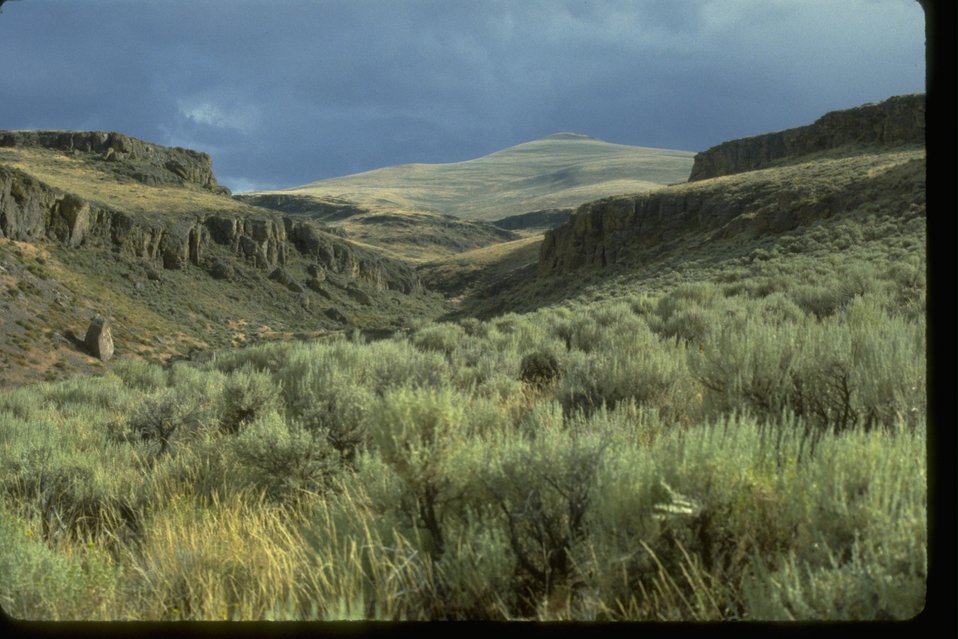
Scenic shot of Beaty Butte.